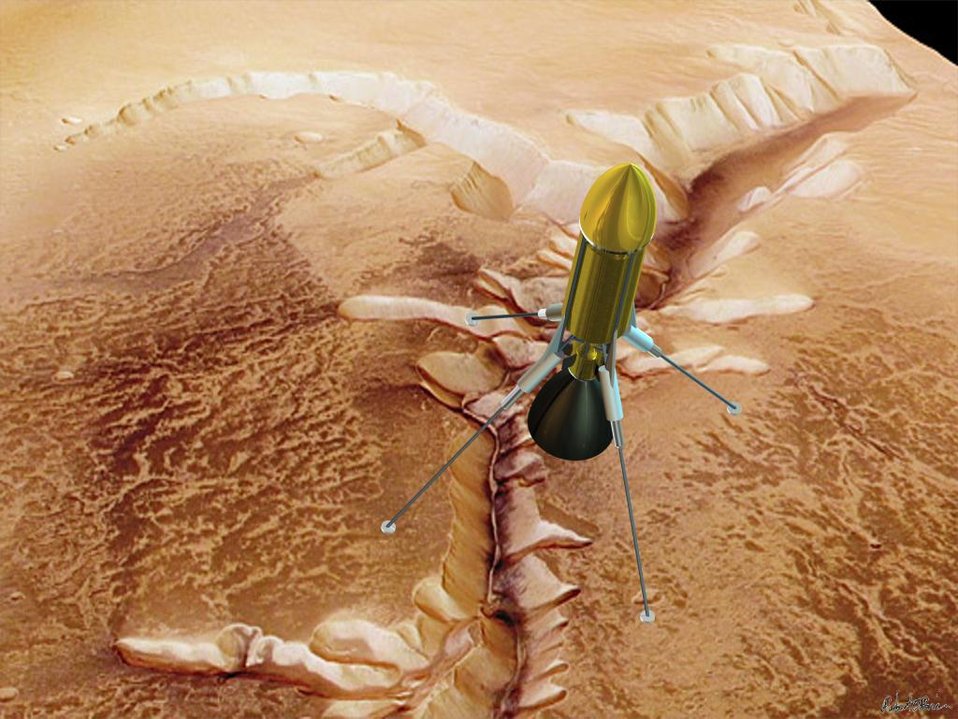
MARS HOPPER SOARING AT THE PEAK OF ITS LEAP, THE PROPOSED HOPPER COULD SOAR MORE THAN A KILOMETER OVER THE MARTIN SURFACE.